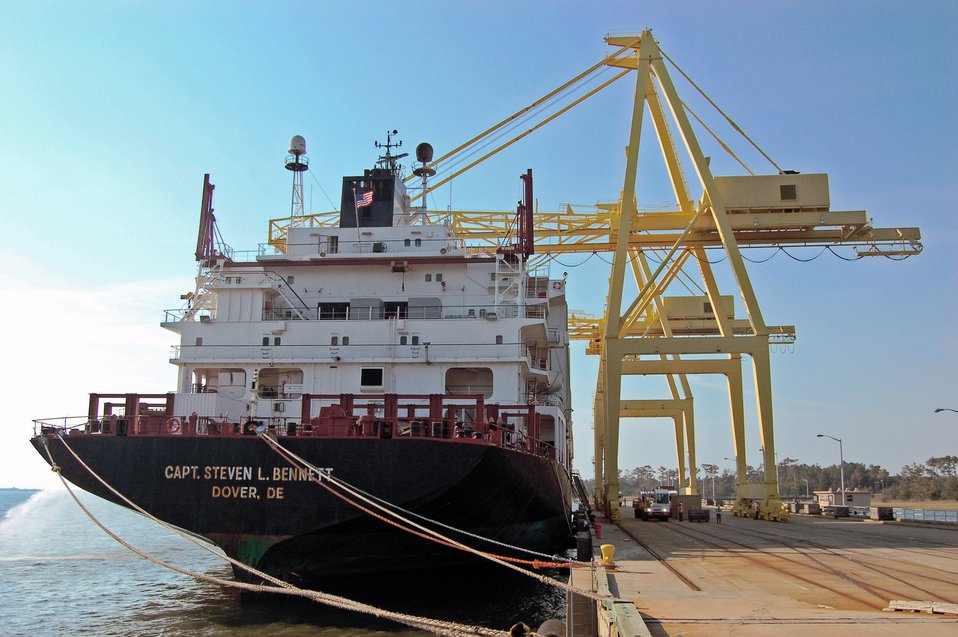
Air Force armada all about the ammo

The MV Capt. Steven L. Bennett, one of the Air Force's Afloat Pre-positioned Fleet ships, sits at one of the docks Oct. 16 at the Military Ocean Terminal-Sunny Point, N.C. The APF ships are loaded with thousands of tons of munitions and then sail to a predetermined point in the Pacific or Indian Ocean where they wait to offload their cargo when needed. The Bennett is one of four ships belonging to the APF.